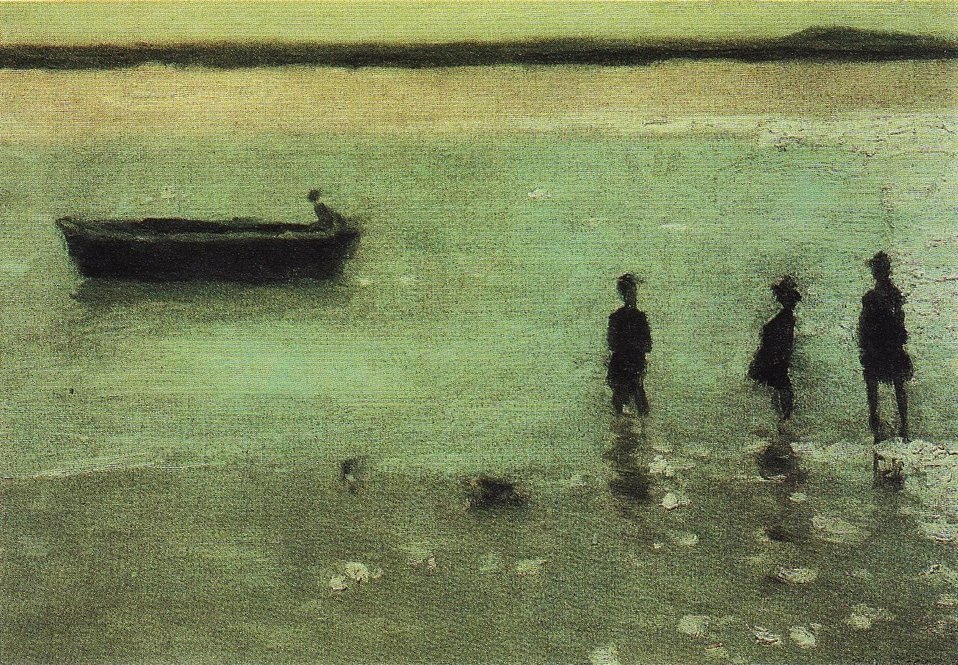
Philip Wilson Steer, The beach at Etaples 1887.